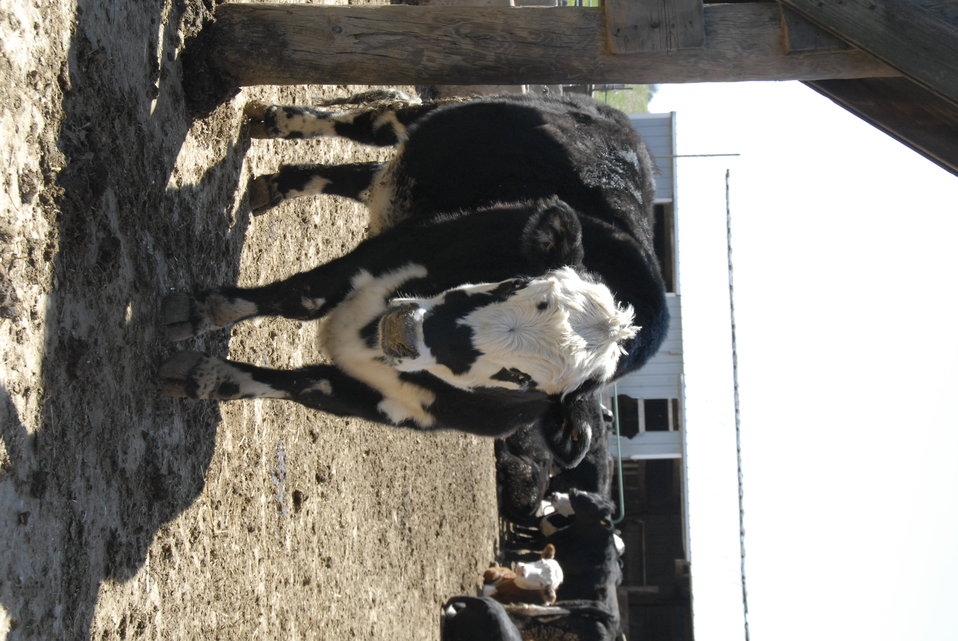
Beef cattle graze in an enclosed area on the Gehrke farm in Elgin, Illinois on April 5, 2008.